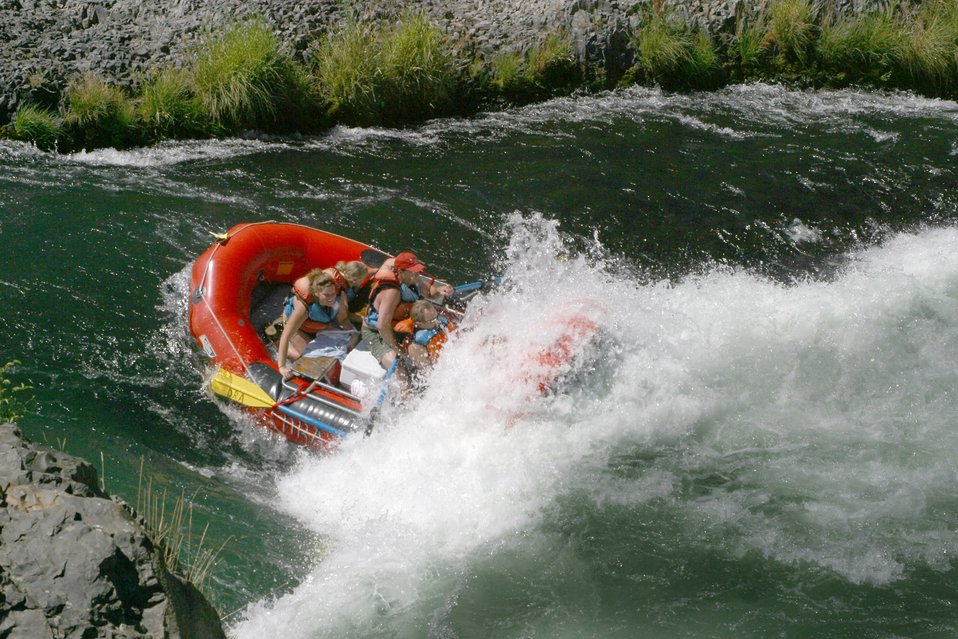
Oak Springs is a Class IV Rapids. The left channel has shallow rocks, large standing waves, turbulent currents and a large hole during high flows. The right channel has a large hole, shallow rocks, and turbulent currents. 7/26/03 Pelton Dam 3600 cfs: Moody Rapids 4300 cfs.